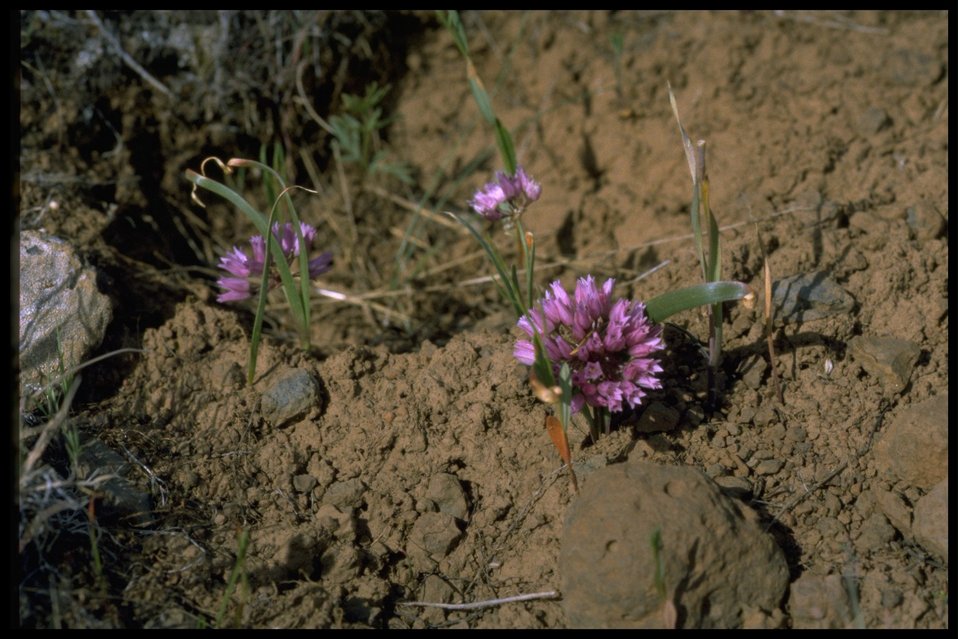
Farshot of Tolmie's onion.